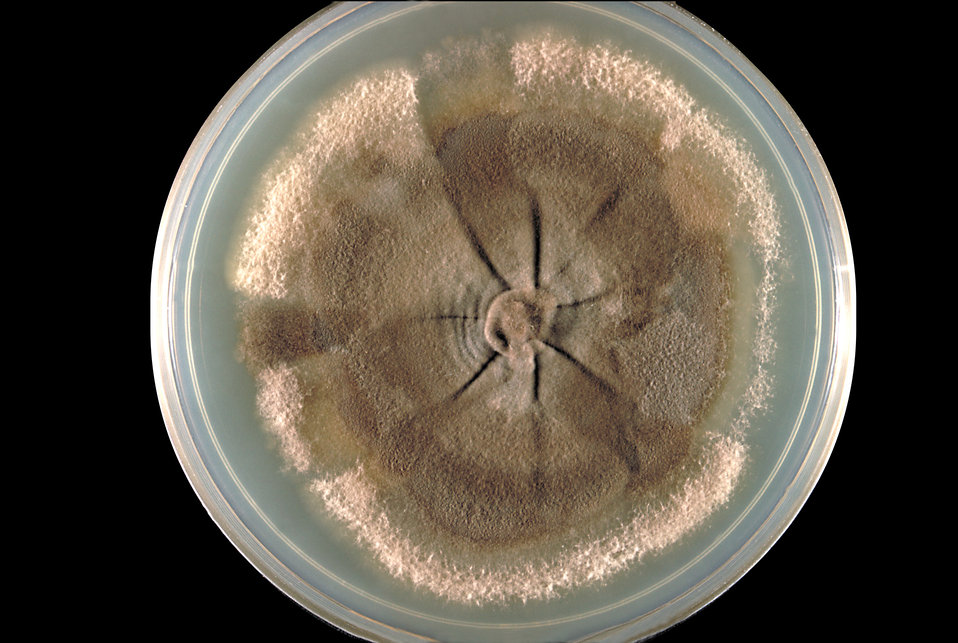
This image shows a plate culture growing the fungus Neotestudina roasti.